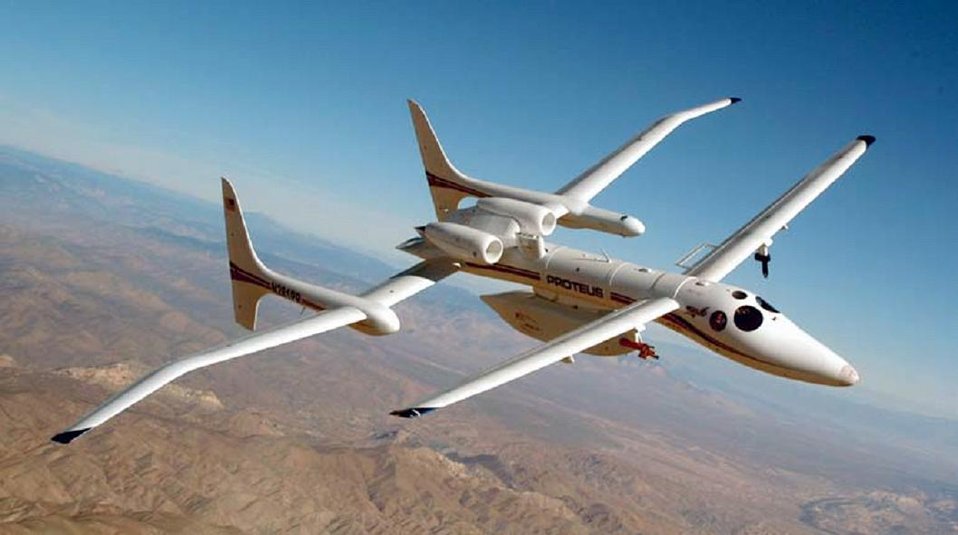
PROTEUS, THE AIRCRAFT USED BY SANDIA'S ATMOSPHERIC RADIATION MEASUREMENT-UNMANNED AEROSPACE VEHICLE (ARM-UAV) PROGRAM.

THE ATOMPHERIC RADIATION MEASUREMENT UNMANNED AEROSPACE VEHCILE (ARM-UAV) PROGRAM, USING THE AIRCRAFT PROTEUS AND A NEW INSTRUMENT PAYLOAD WITH SATELLITE LINKS, CARRIES OUT A SERIES OF HIGH-ALTITUDE RESEARCH FLIGHTS. THE DATA GATHERED BY THE ARM-UAV PROGRAM WILL HELP GUIDE THE WAY IN WHICH CLOUD PHYSICS IS EMBODIED IN CLIMATE MODELS.